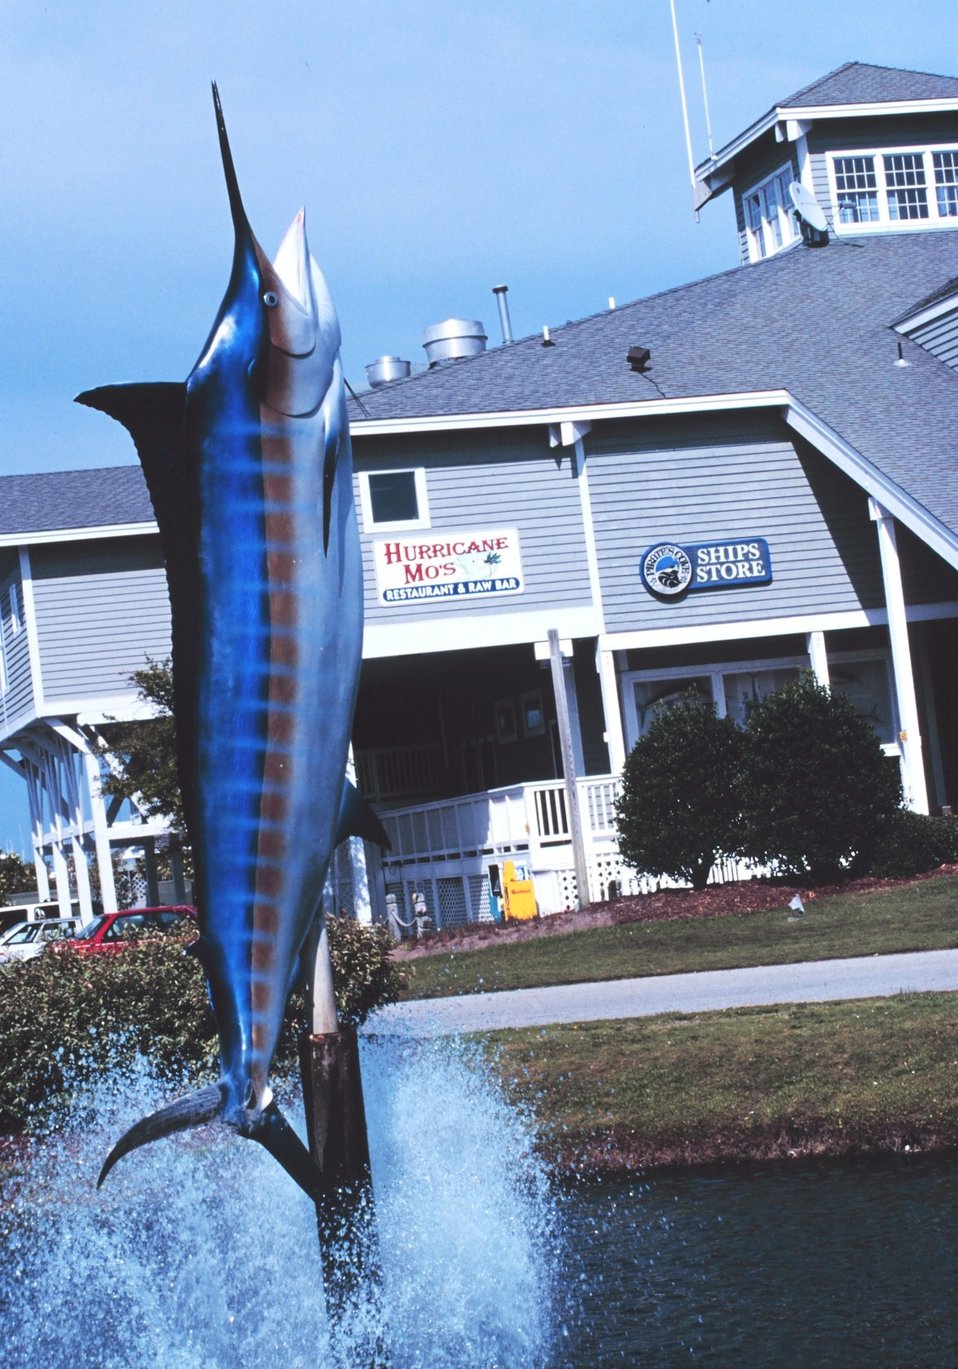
Fish art at Pirate's Cove Marina and home sites